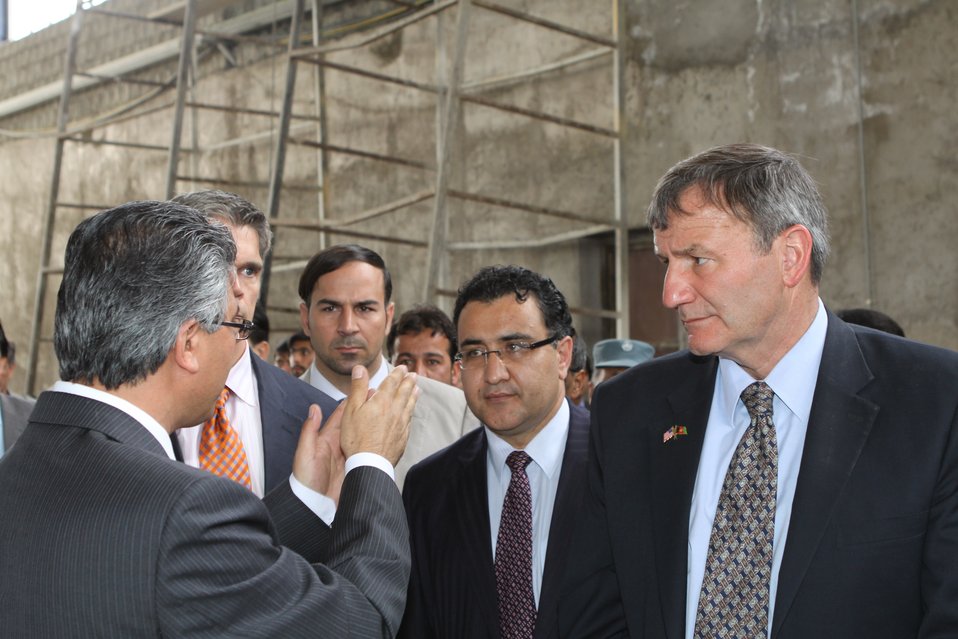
100525 Hirat Marble Conference 451